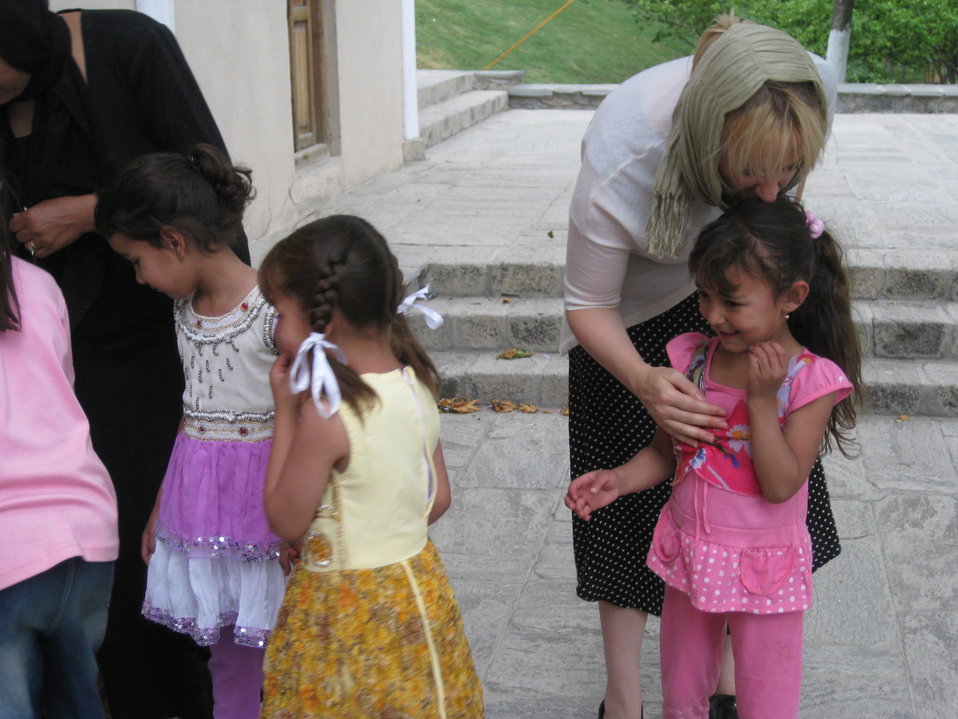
Afghan Youth Voices 103